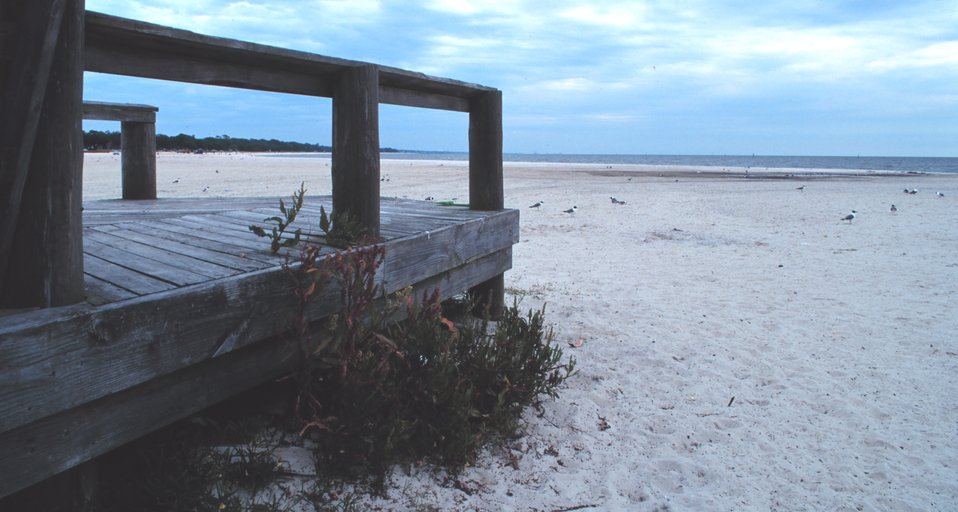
The sandy beach at Biloxi